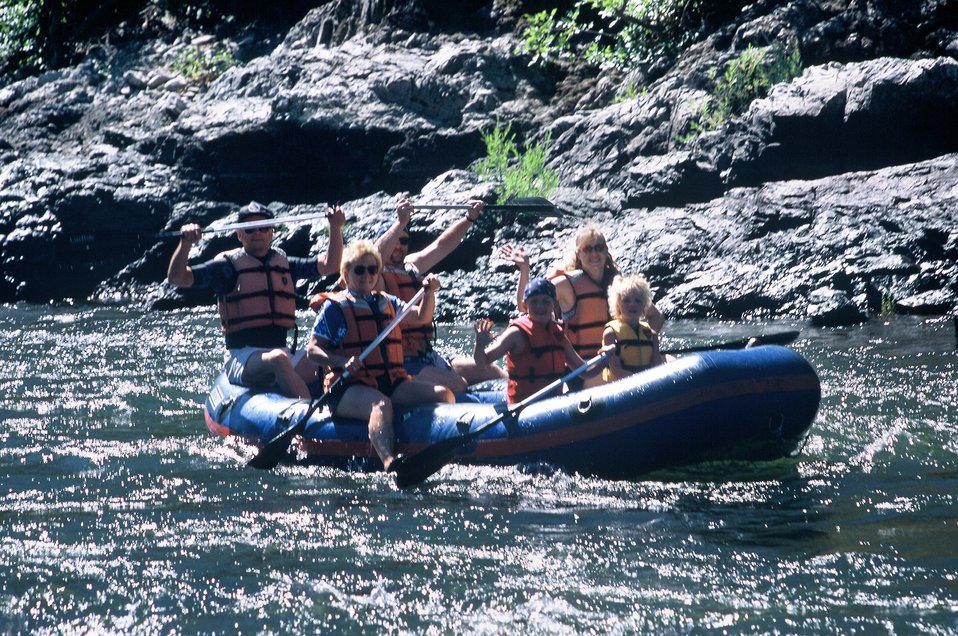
Hog Creek